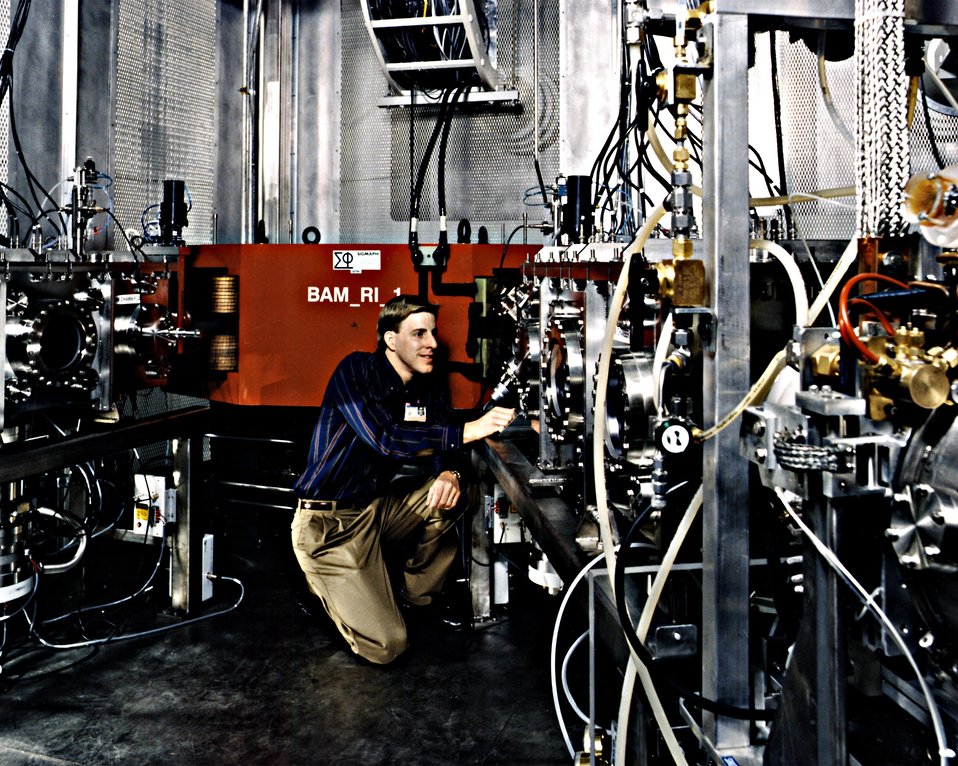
ORNL SCIENTIST ADJUSTING EQUIPMENT AT THE HOLIFIELD RADIOACTIVE BEAM FACILITY.

ORNL'S HEAVY ION RESEARCH FACILITY WAS REVAMPED TO CREATE THE NEW FACILITY. THE HOLIFIELD RADIOACTIVE BEAM FACILITY, OPERATIONAL, IN THE SUMMER OF 1996, WILL ENABLE RESEARCHERS WORLDWIDE TO CREATE AND ACCELERATE RADIOACTIVE NUCLEI THAT DO NOT OCCUR NATURALLY ON EARTH. BY STUDYING PRODUCTS OF THESE EXOTIC NUCLEI COLLIDING WITH VARIOUS TARGETS, SCIENTISTS HOPE TO LEARN MORE ABOUT THE UNIVERSE, SUCH AS HOW STARS GENERATE ENERGY AND WHY THEY ULTIMATELY EXPLODE.